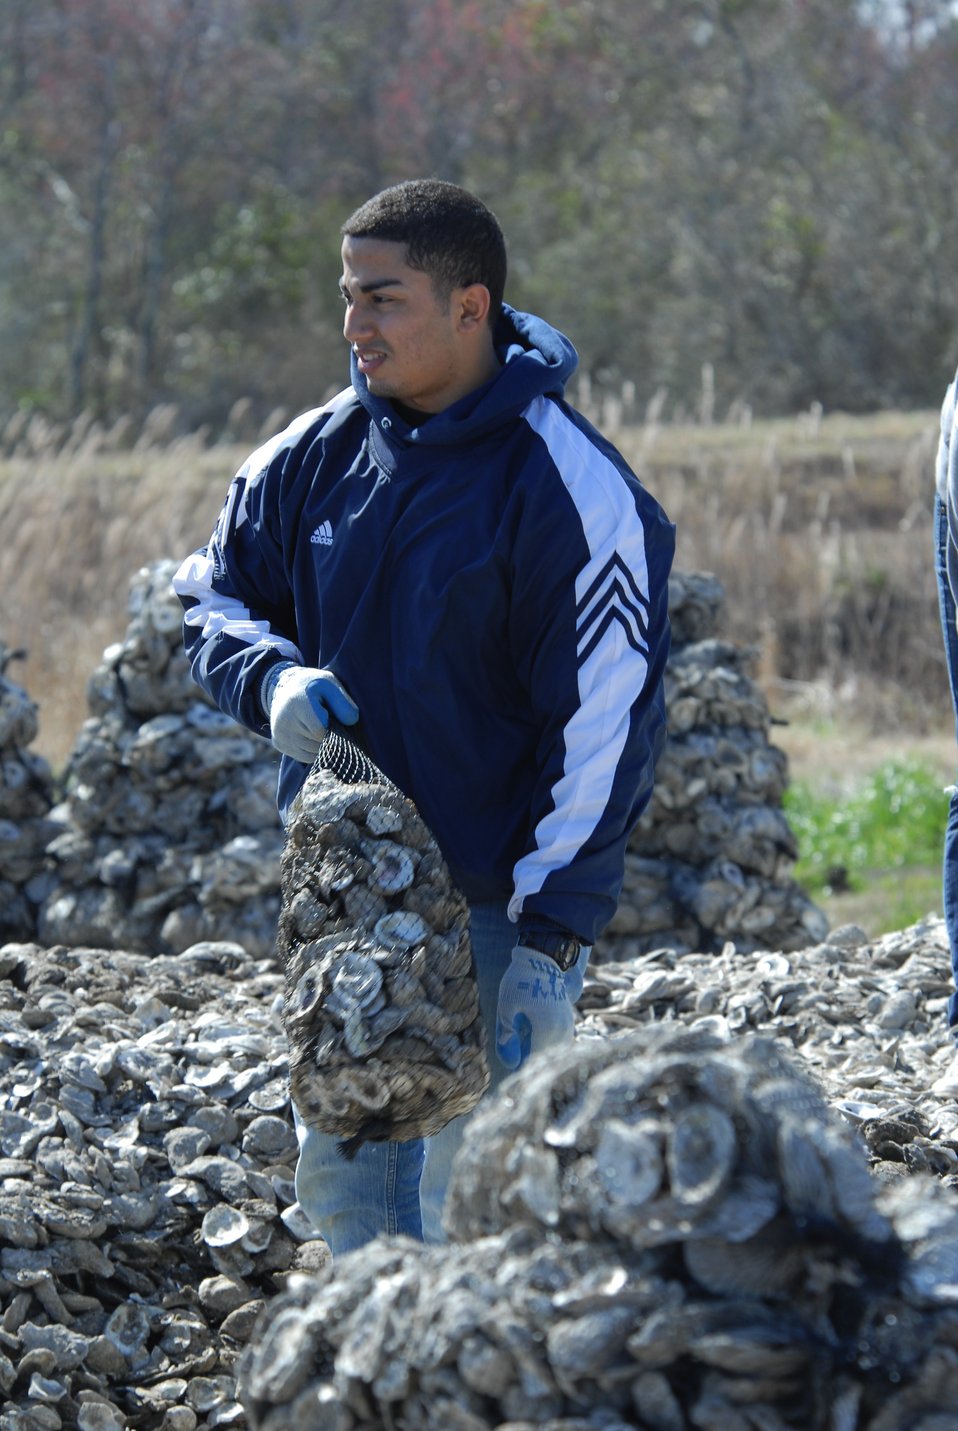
Oyster bagging

University of North Carolina at Greensboro Student Juan Santos bags oyster shells to build an oyster reef, one of two types of artificial reefs being installed. The reefs are already showing signs of life, recruiting live oysters.